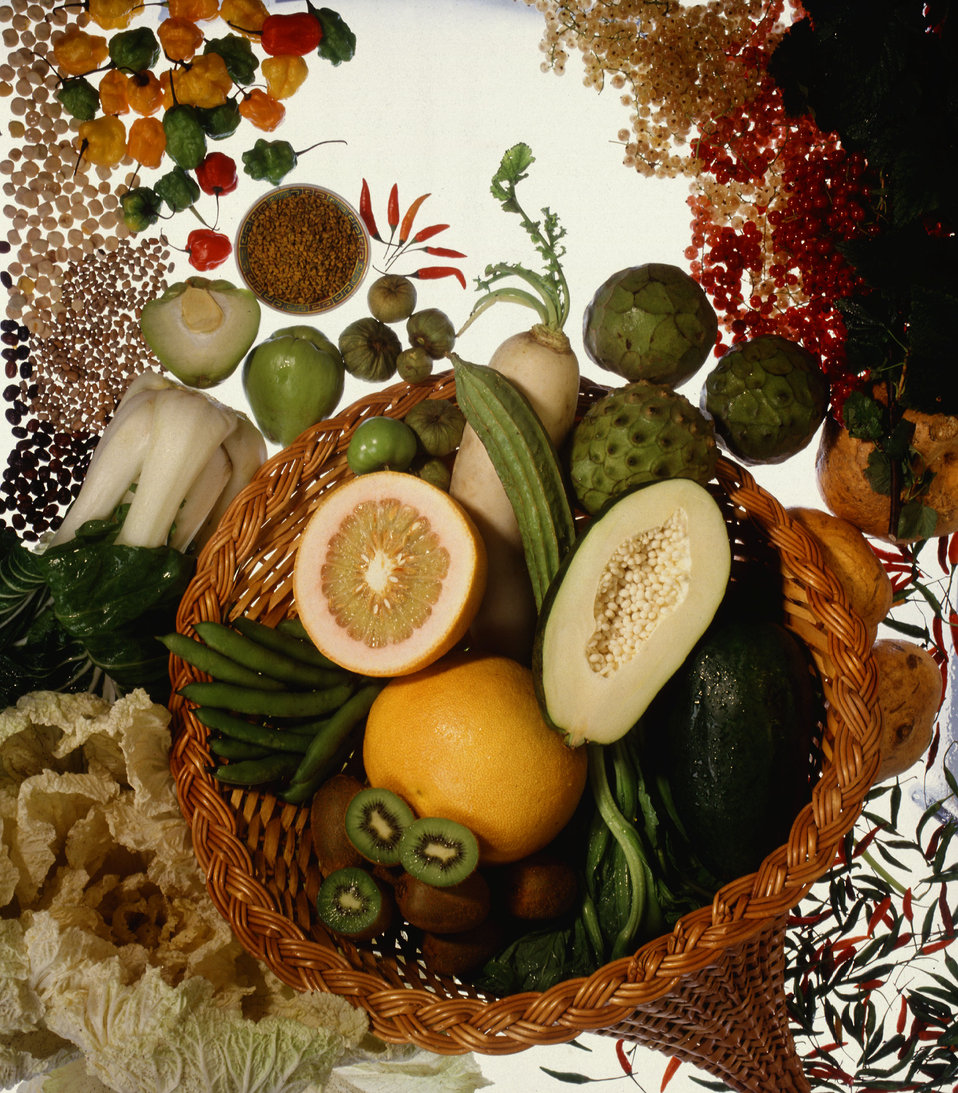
International foods are finding a place on American tables. Thousands of potential crops are stored in the U.S. Department of Agriculture’s (USDA) Agricultural Research Service (ARS) germplasm repositories nationwide.